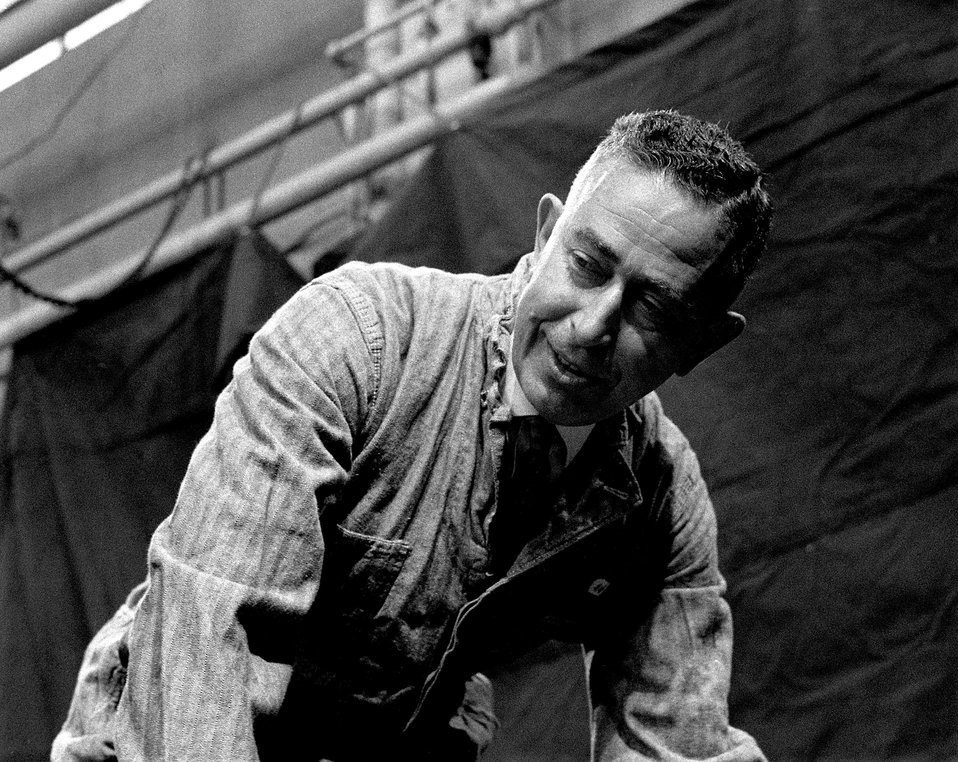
Al Wattenburg, a member of Walter Zinn's 'construction' crews at the CP-1..